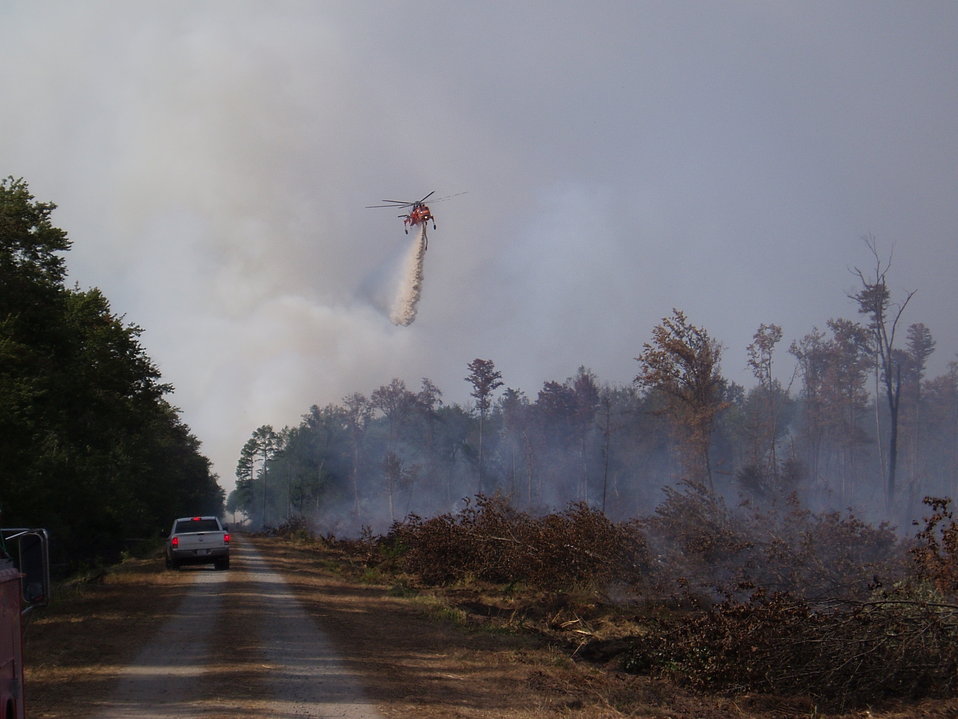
Supporting the ground from the air

Suffolk, VA, August 3011. A helicopter drops water on the Lateral West Fire on Great Dismal Swamp National Wildife Refuge to assist firefighters on the ground in holding the line.